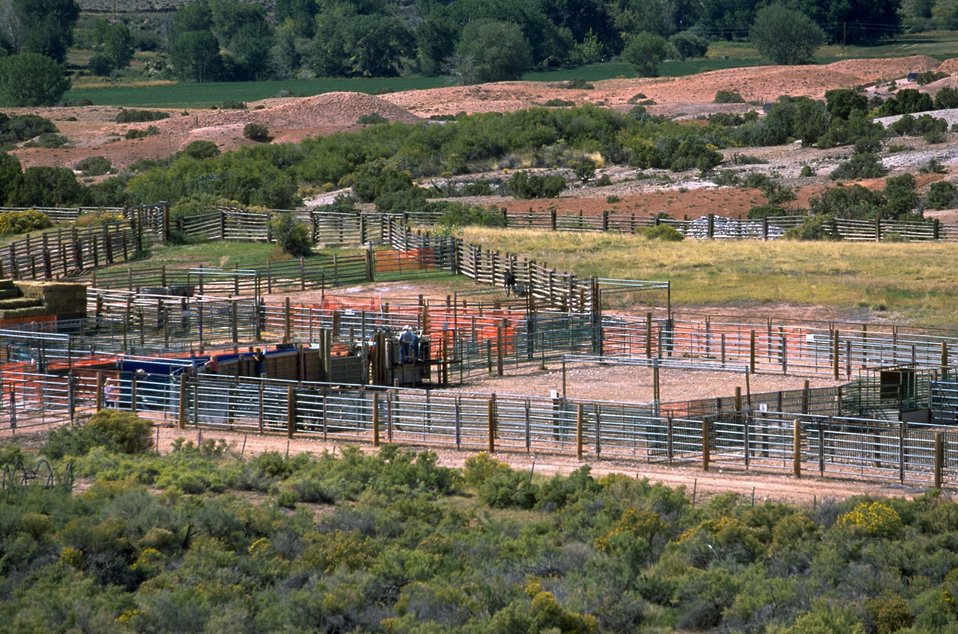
Britton Spring Holding Area in the Pryor Mountain National Wild Horse Range